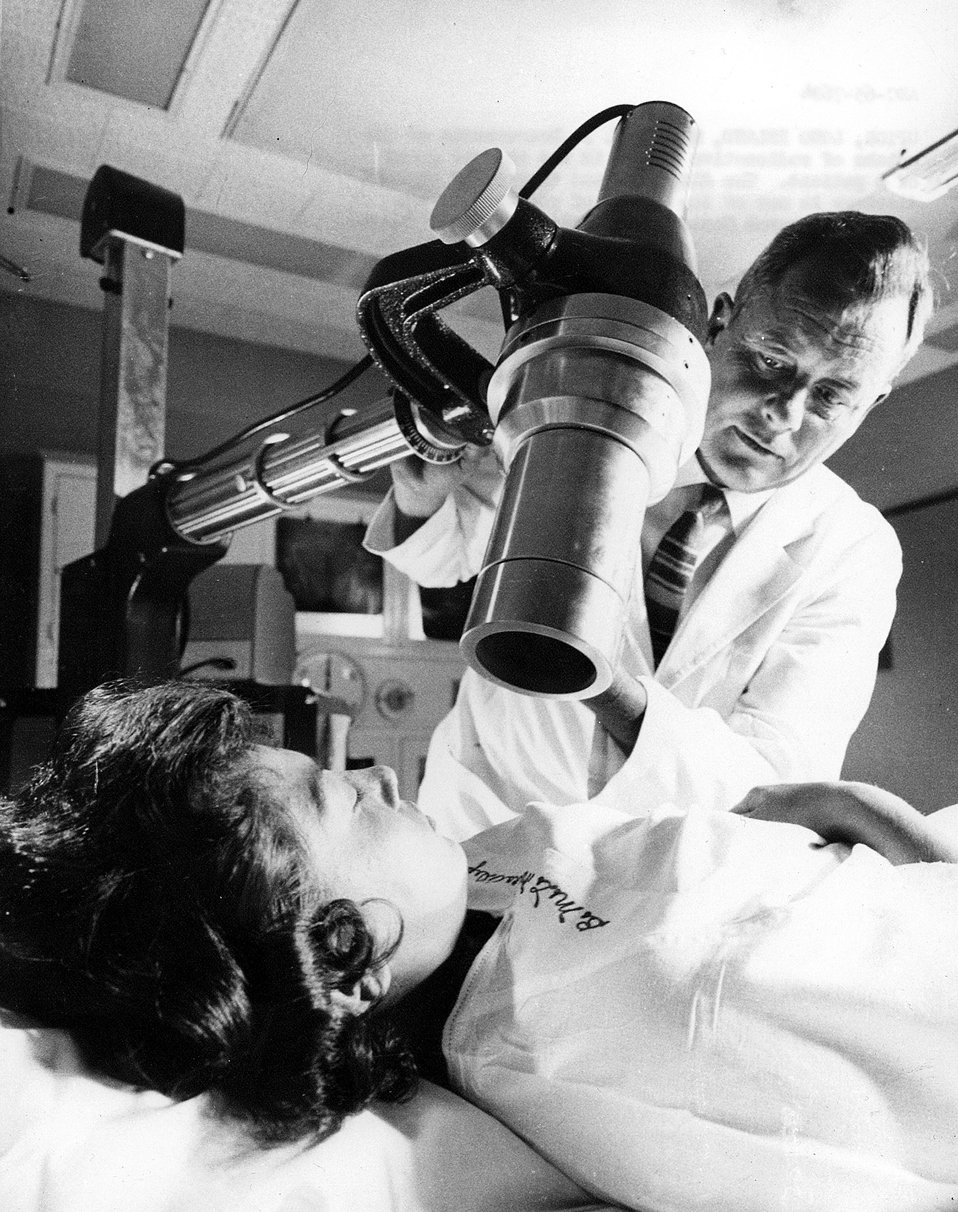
Measurement of the uptake of radioactive iodine in the thyroid gland of a patient.
c.1965